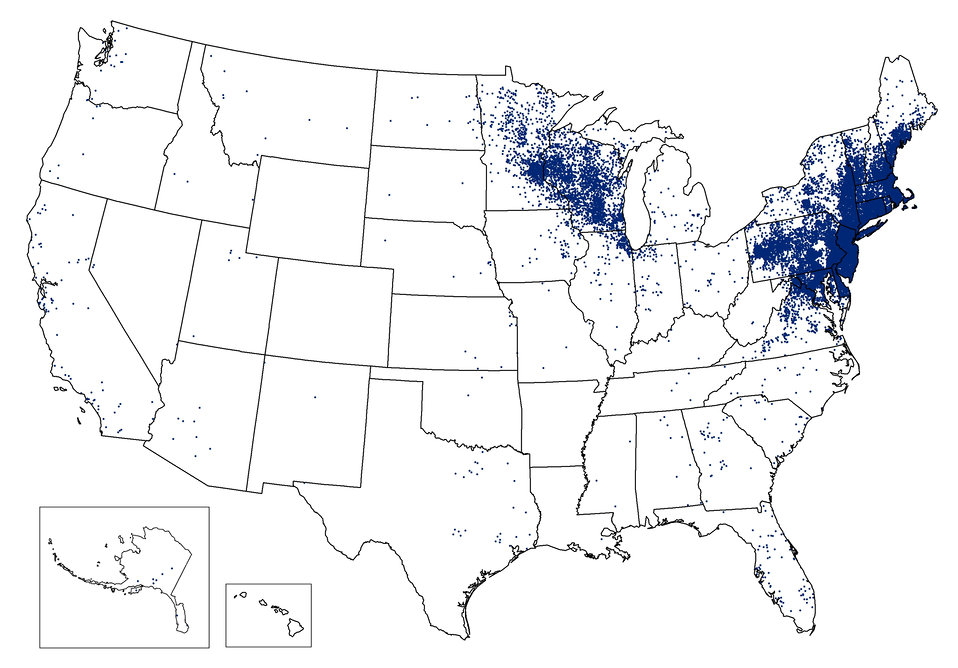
Lyme Disease

Map showing the 24,364 reported cases of Lyme disease in the United States during 2011. In 2011, 96 percent of Lyme disease cases were reported from 13 states ranging from Maine south to Virginia and west to Minnesota.

See also www.nist.gov/mml/lyme-041713.cfm

Credit: National Center for Emerging and Zoonotic Infectious Diseases, Centers for Disease Control and Prevention